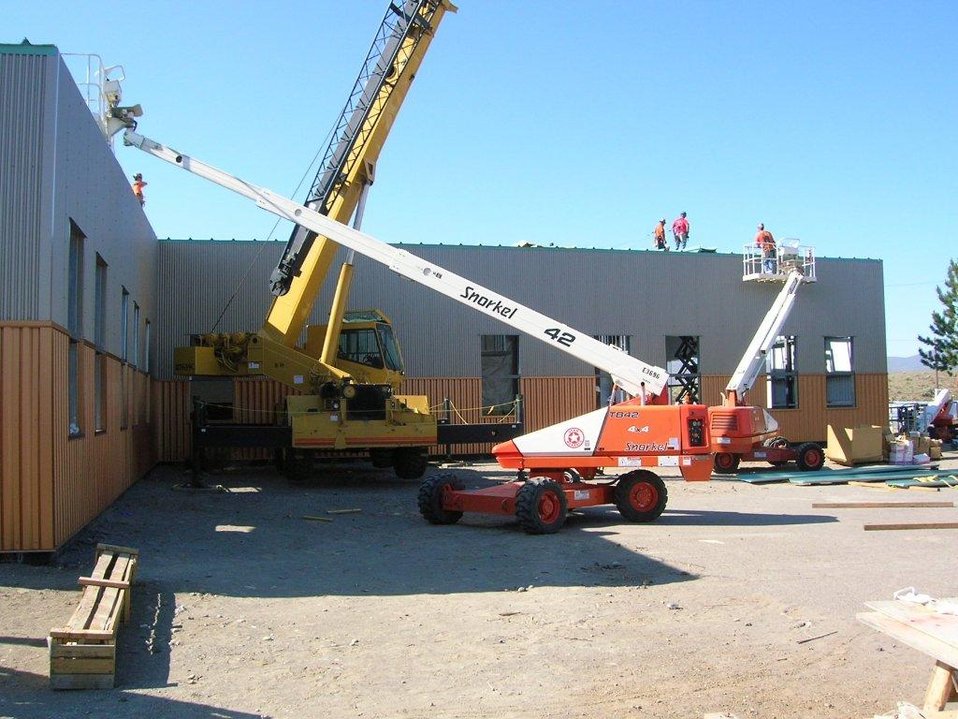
ORP Construction

Construction of new, Recovery Act-funded buildings, like the one shown here at Hanford's 222-S Laboratory, will significantly extend the life span of facilities that are critical to ORP's long-term mission of tank waste retrieval and treatment.